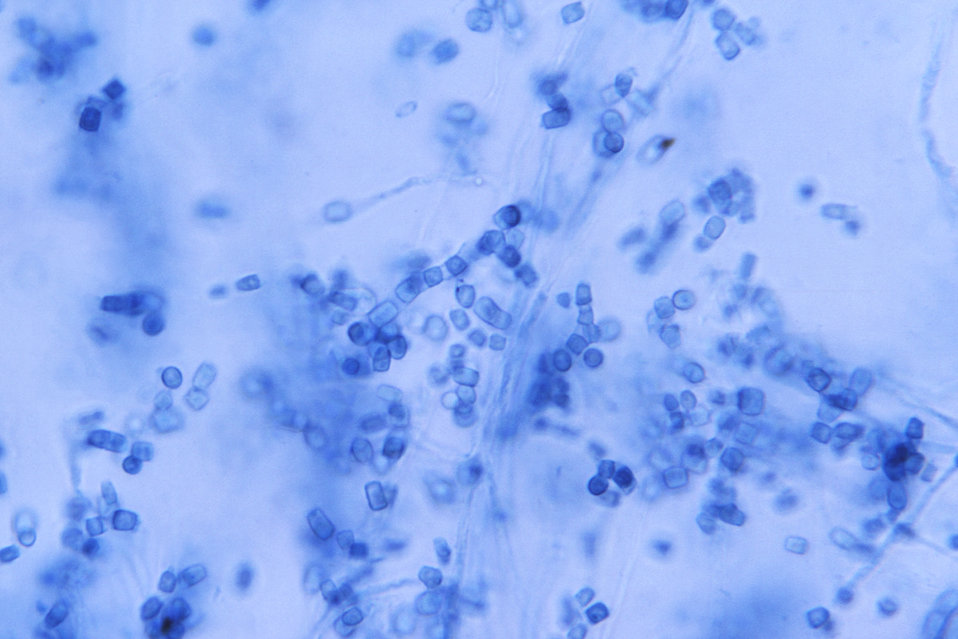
Magnified 500X, this photomicrograph revealed the presence of, thin, septate, hyaline or glass-like hyphae, from which numerous, thick-walled Coccidioides immitis arthroconidia have sprouted. The average arthrospore measures 3.0 x 4.5�m, and is barrel-shaped.